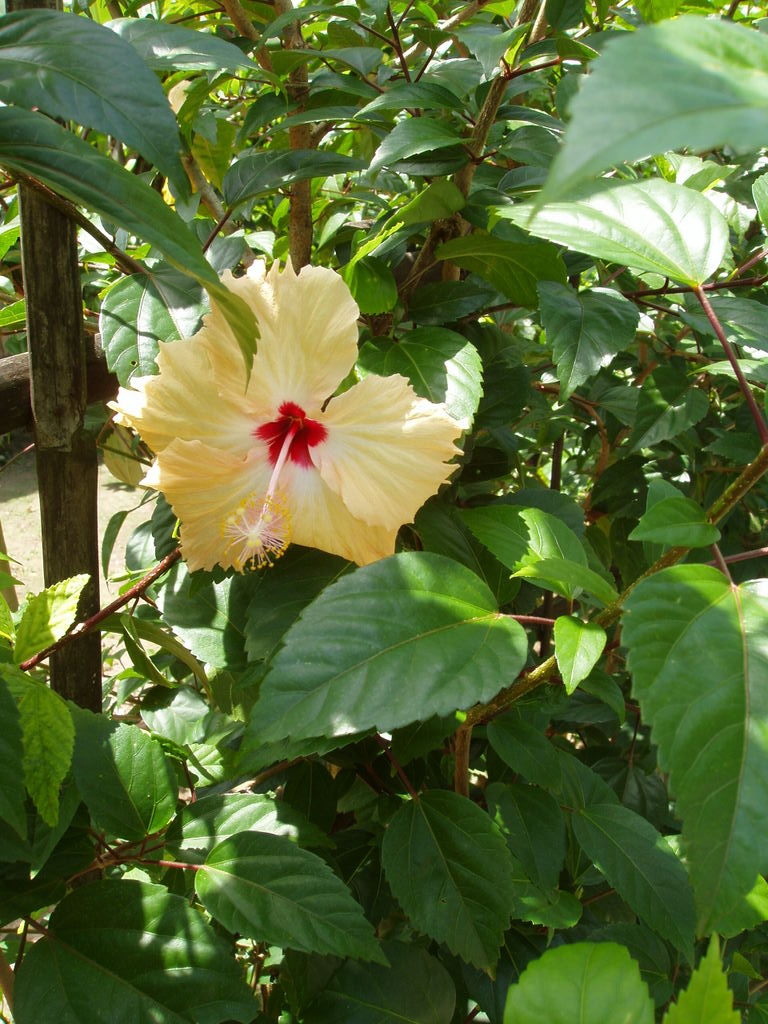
Tiếng Việt: Hình do tôi chụp